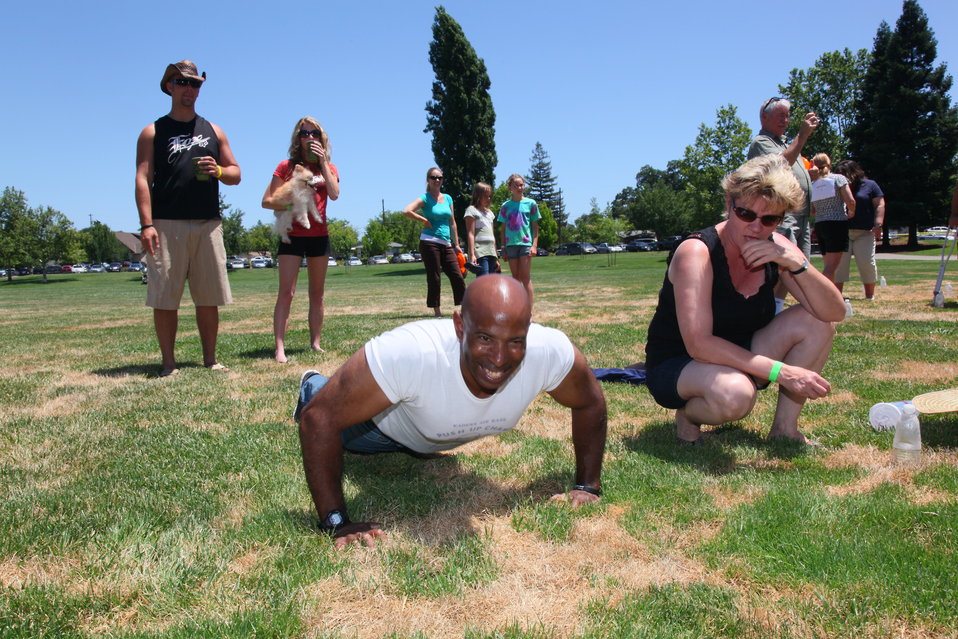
2011 Annual Picnic